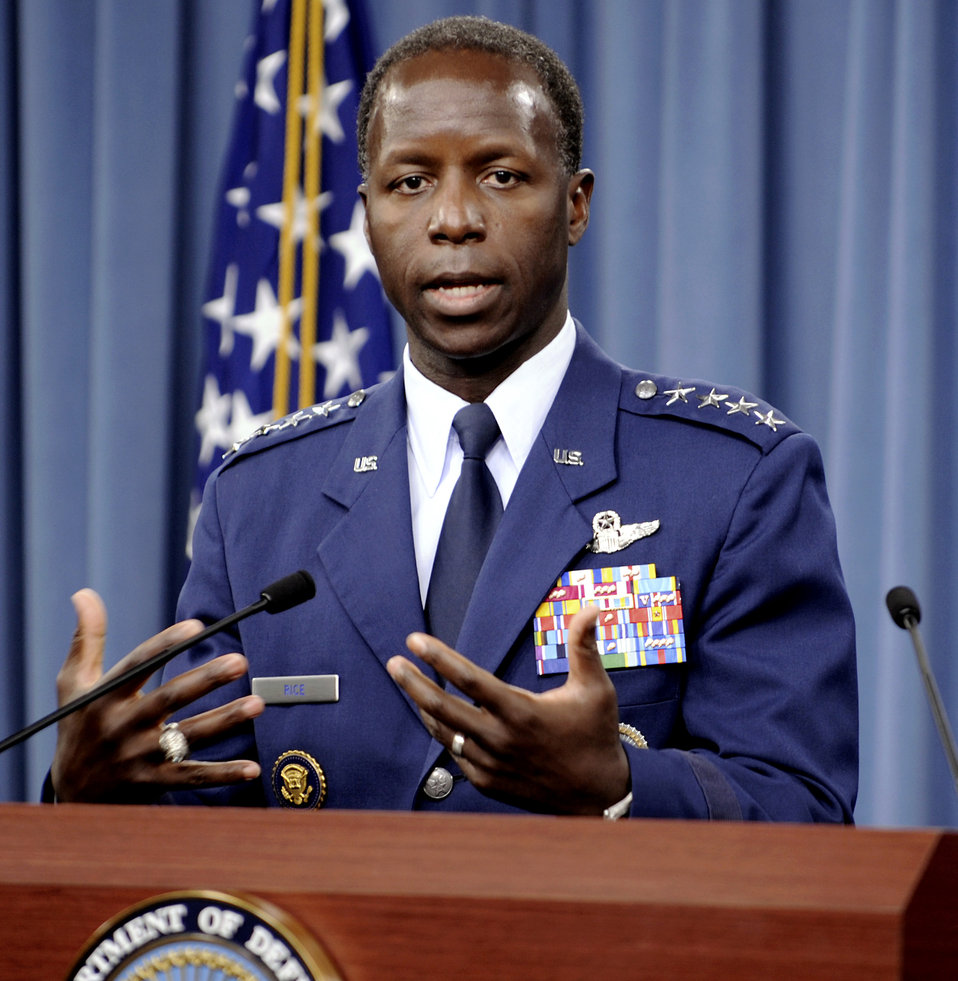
AETC investigation

Gen. Edward Rice Jr., Commander, Air Education and Training Command, gives a press briefing on allegations of sexual misconduct involving basic military training instructors at Lackland Air Force Base in the Pentagon on June 28, 2012. An investigation since June 2011 into the allegations is still ongoing.